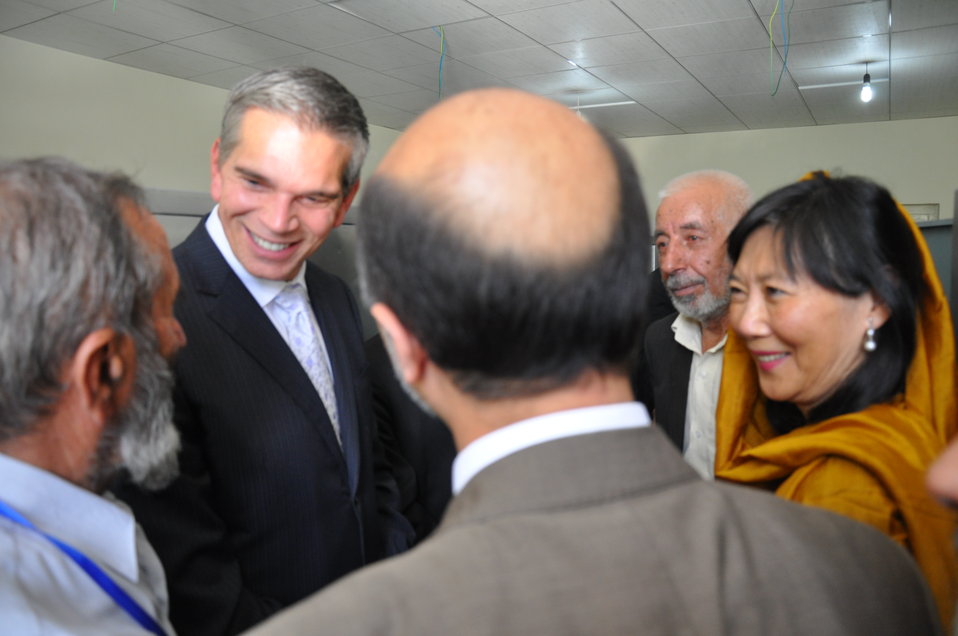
Kabul University Herbarium